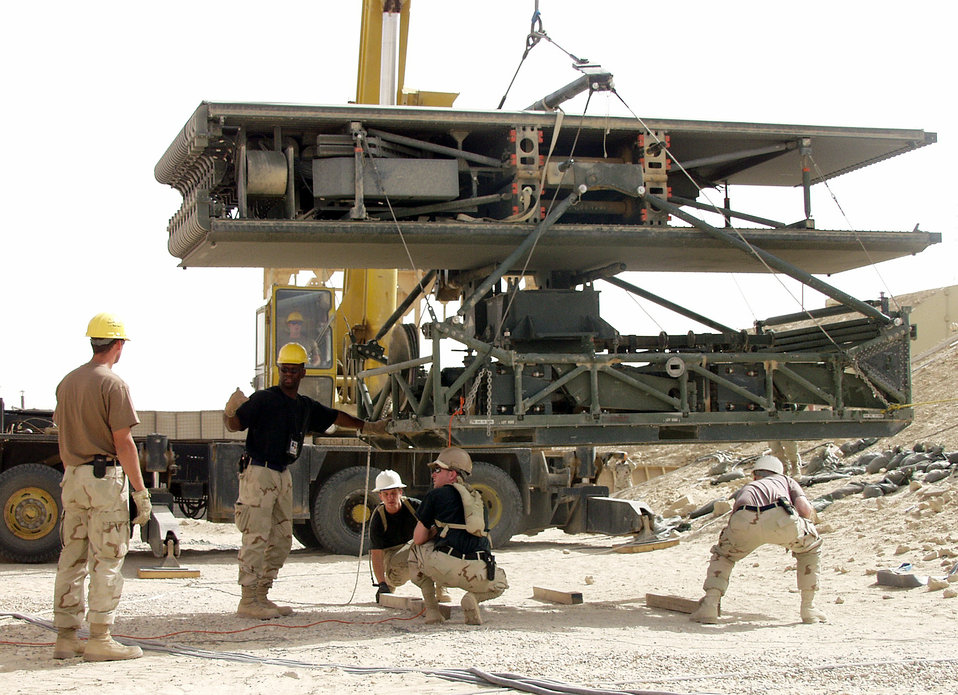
Packin' up

OPERATION IRAQI FREEDOM - Staff Sgt. William Gould (left), and Tech. Sgt. Tracy McGee, both members of the 386th Expeditionary Civil Enginner Squadron, discuss adjustments that need to be made by the crane operator while members of the 386th Expeditionary Air Control Squadron adjust the boards that the radar will be lowered onto. The radar was shut down May 17, marking the closure of the squadron after eight years of controlling the skies of southern Iraq.